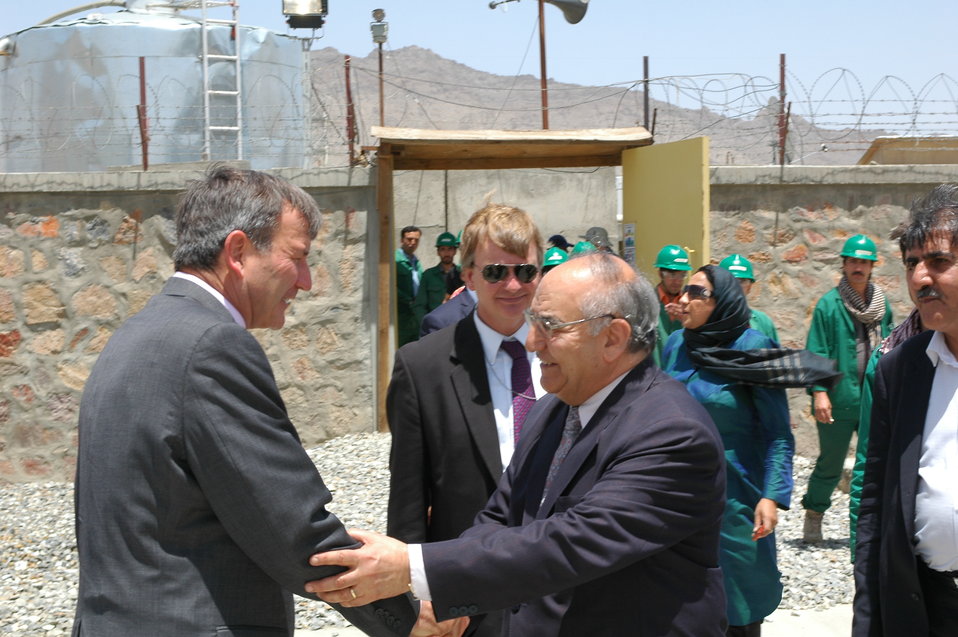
105 MW Tarakhil Power Plant Handover